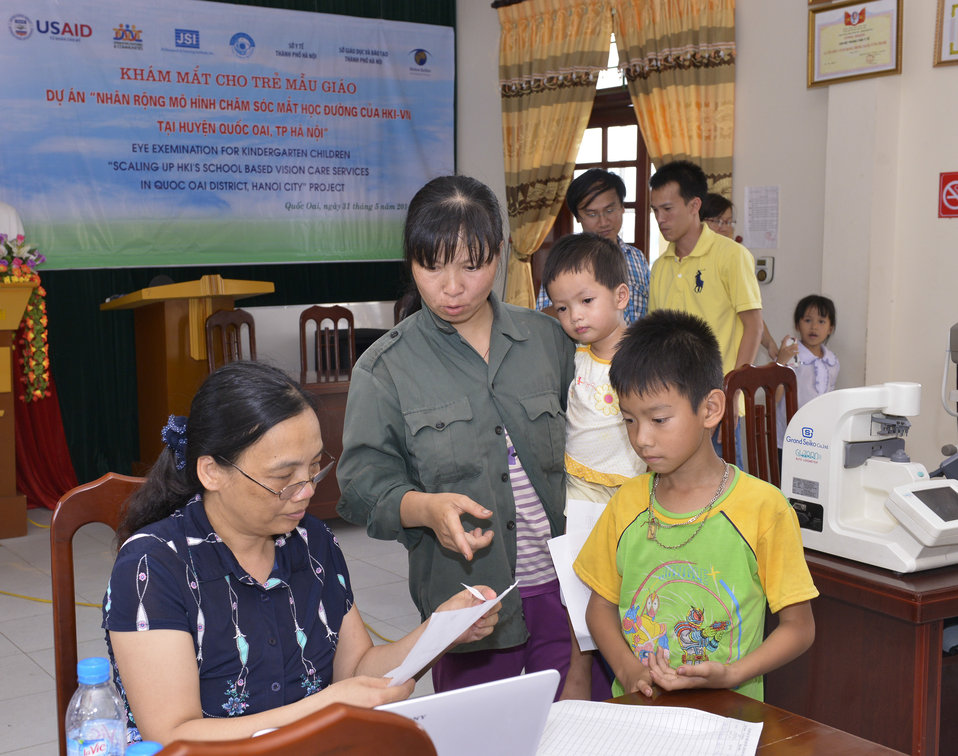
Eye screening for kindergarten children in Quoc Oai district of Hanoi

Quoc Oai, Hanoi. May 31, 2014.